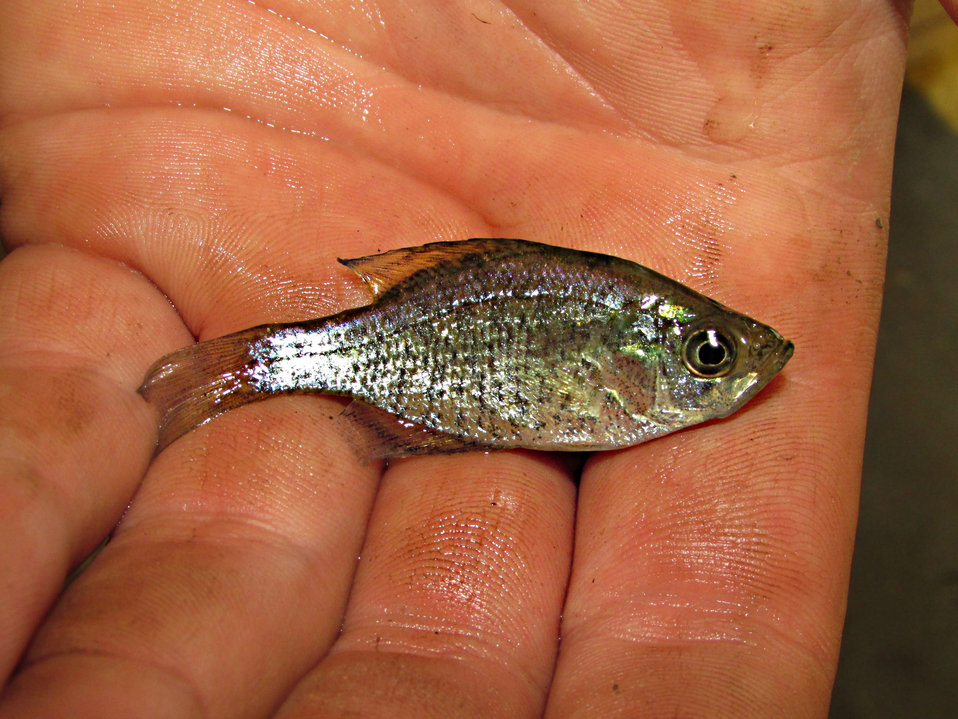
Crappie Fry

Today we sent about 60 lbs of crappie and 45 lbs of bluegill to Lake Lakota near the Newton Hills State Park. That is roughly 40,000 fish! Here's a picture of one of the crappie before making the trip.